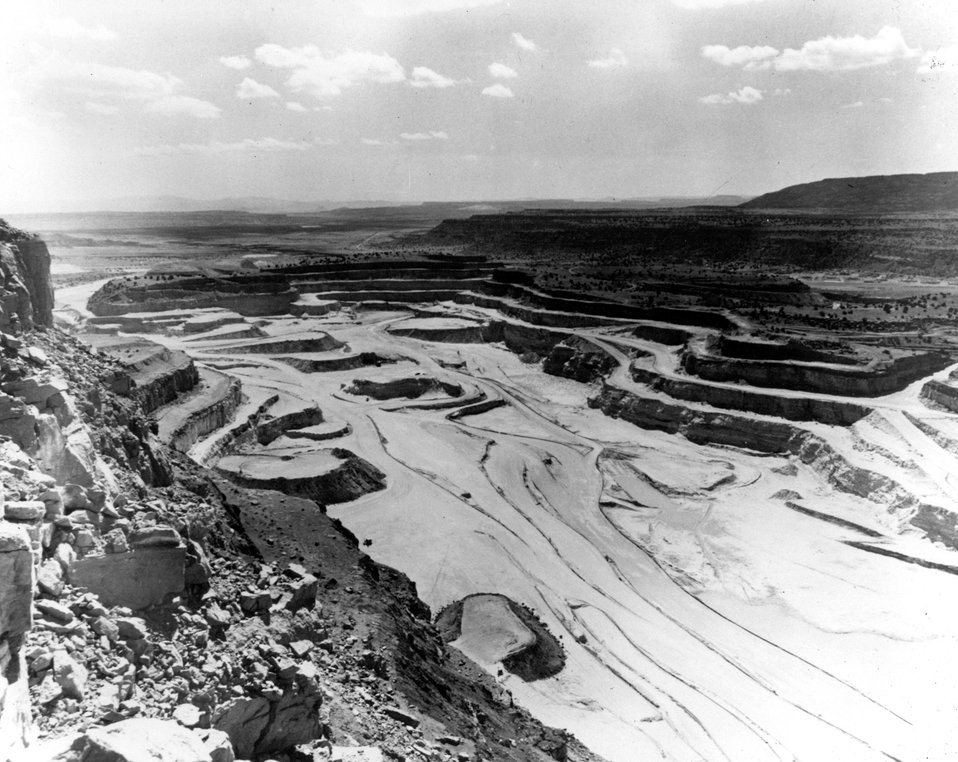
Jack pile Mine, New Mexico, largest open-pit uranium mine in the United States. c. 1965